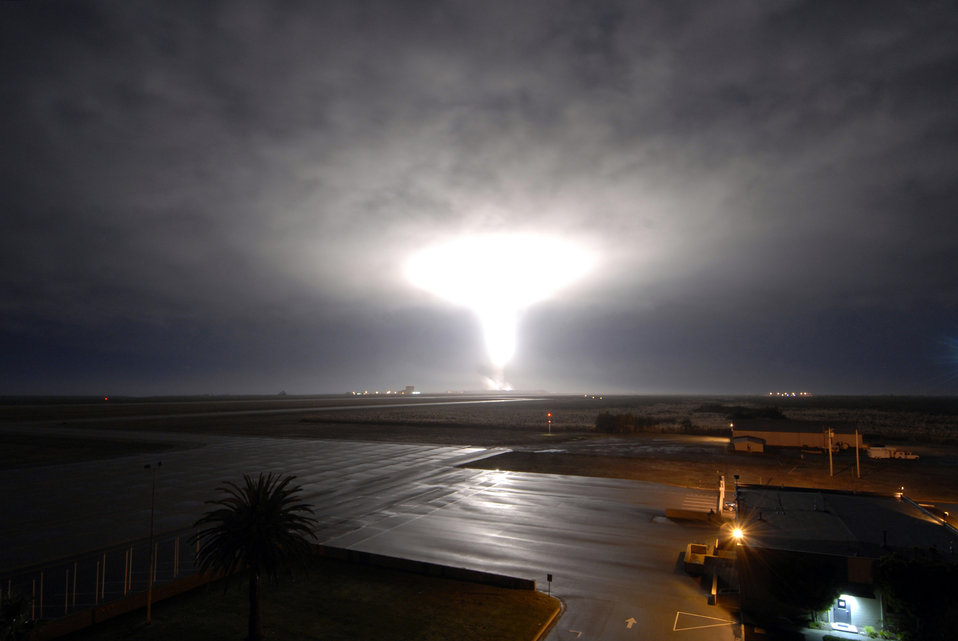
NASA WISE Delta II launch successful

Vandenberg Airmen launched a Delta II rocket Dec. 14, 2009, from Space Launch Complex 2 at Vandenberg Air Force Base, Calif. The rocket carried NASA's Wide-field Infrared Survey Explorer satellite.